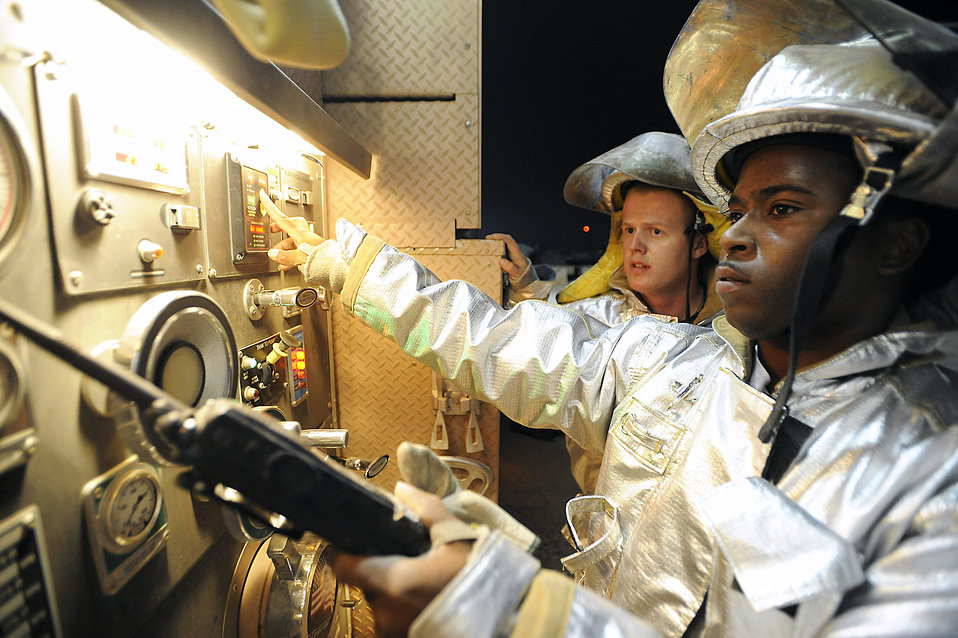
We didn't start the fire

Senior Airman Daniel Utley monitors fire engine controls as Airman 1st Class Jason Kennedy observes during a live-fire training scenario Oct. 22 at Joint Base Balad, Iraq. The Joint Base Balad Fire Department conducted the training to give individual firefighters experience using hose patterns on interior fires. Both Airmen are assigned to the 332nd Expeditionary Civil Engineer Squadron. Airman Utley is deployed from Dyess Air Force Base, Texas, and Airman Kennedy is deployed from Dover AFB, Del.